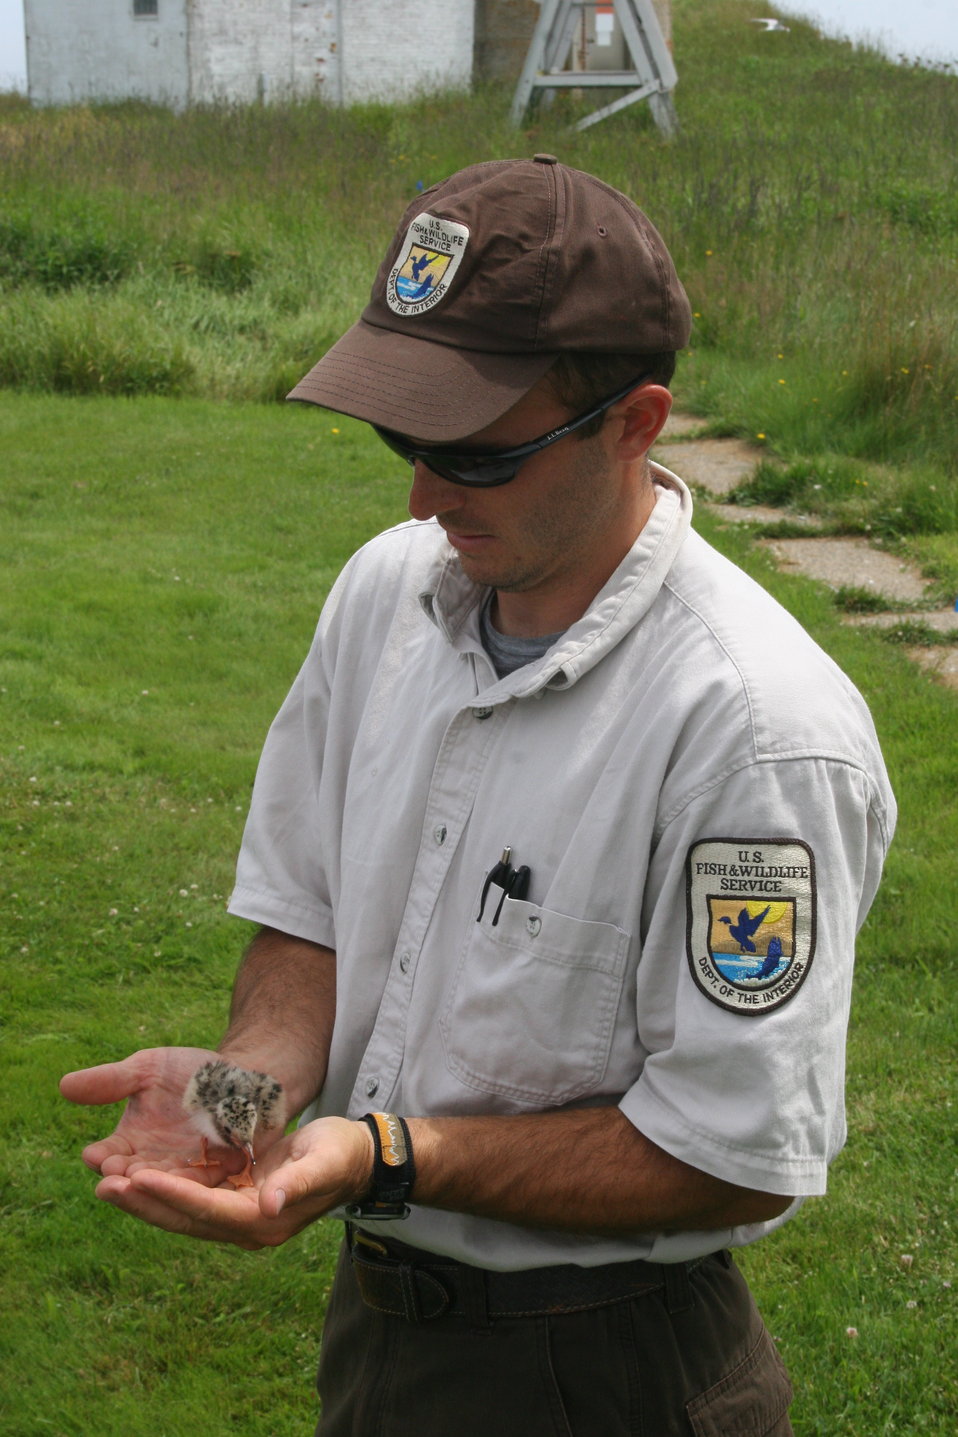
FWS Worker Holding Tern Chick